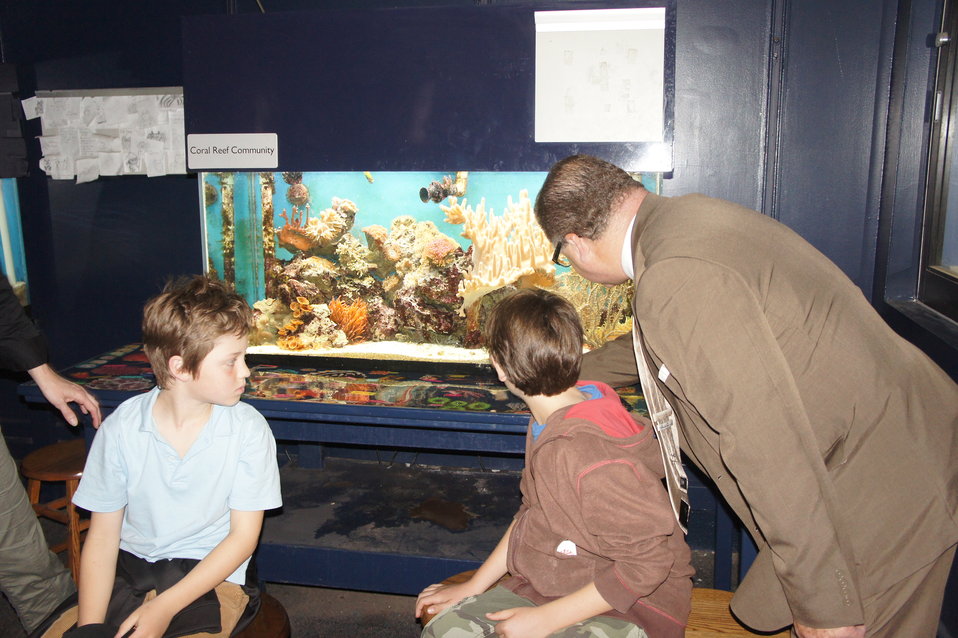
'Save the Nautilus' co-founder visits Smithsonian National Zoo

Bryan Arroyo, U.S. Fish & Wildlife Service Assistant Director of International Affairs, along with Josiah and Lucas Utsch examine the many creatures in one of the aquarium habitats at the Smithsonian National Zoo.